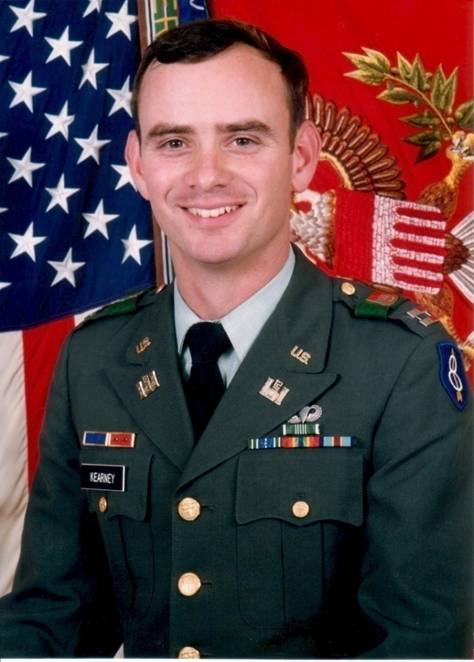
Rick Kearney

Richard Kearney, Assistant Regional Director, Science Application in the Pacific Southwest Region, served in the U.S. Army from 1980 to 2000 with assignments in Germany (1981-1985), Maryland (1985-1992), Hawaii (1992-1996) and Virginia (1996-2000). He retired from active duty at the rank of Lieutenant Colonel.